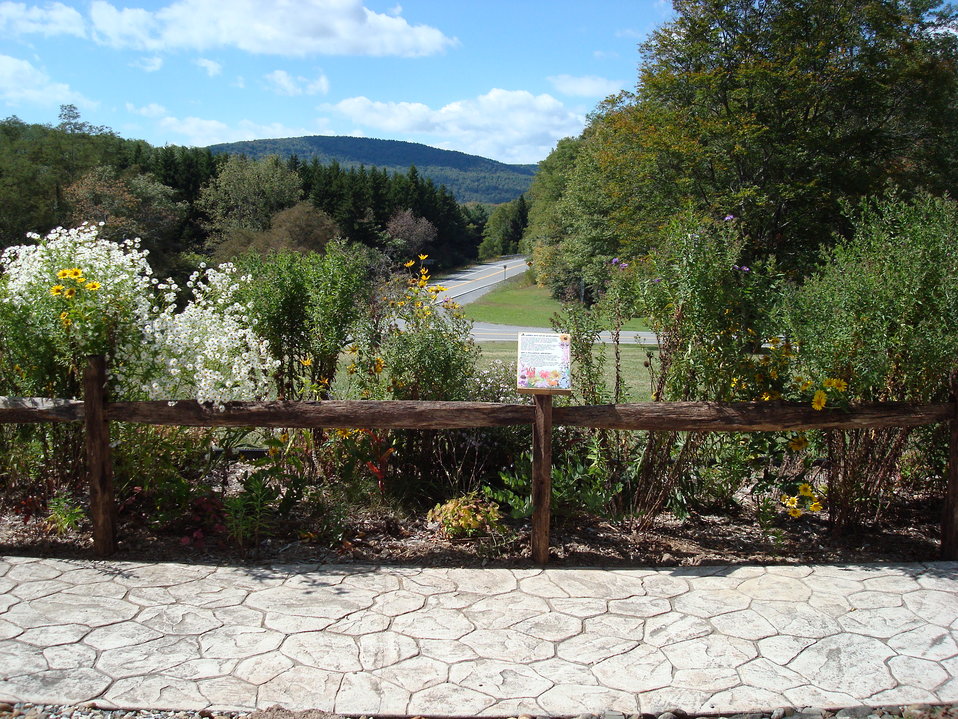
Pollinator 1

The Cranberry Mountain Nature Center Native Plant and Pollinator Garden is located along an accessible walkway with views of the highland Scenic Highway in Richwood, WV.